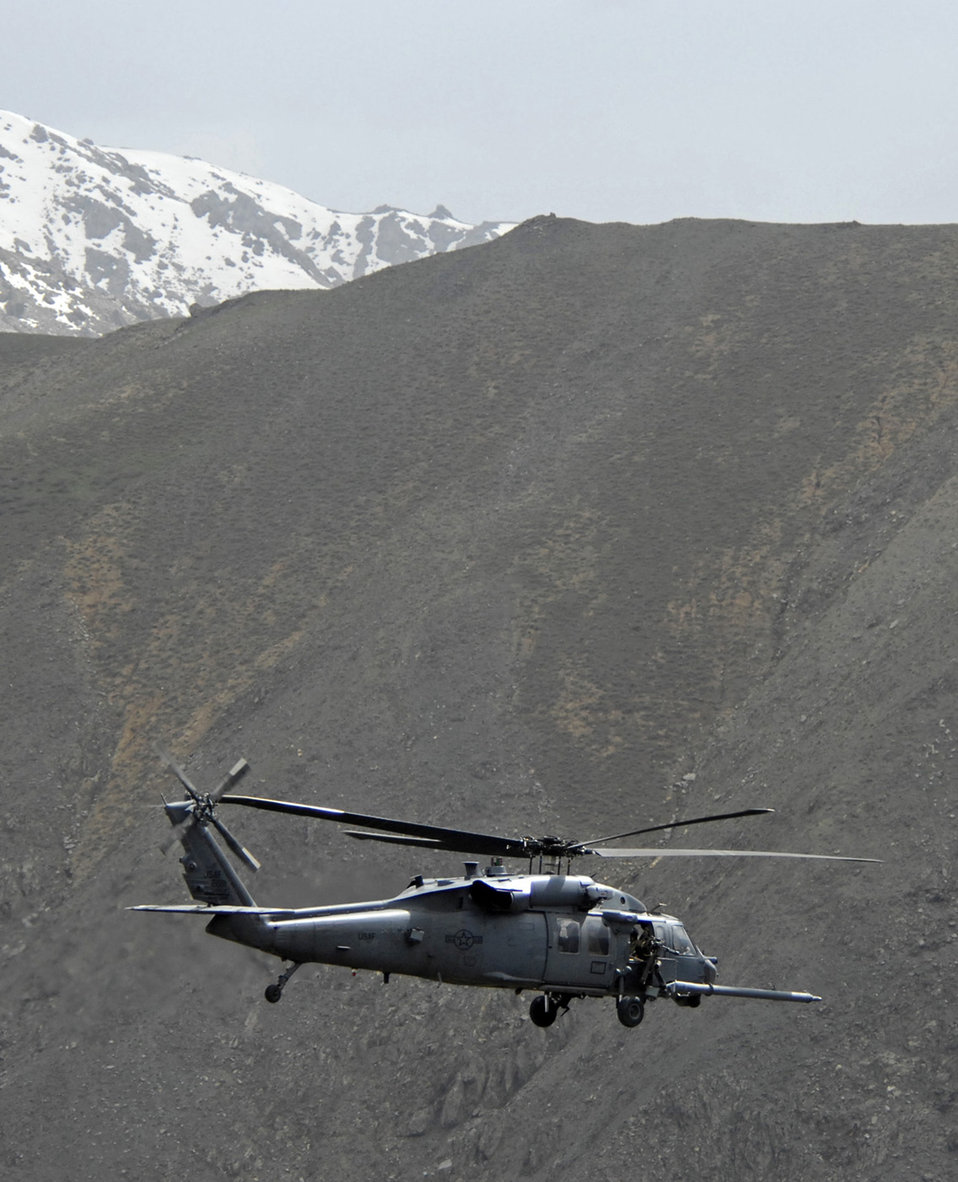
New York Guardsmen stay on alert to save lives

A 101st Expeditionary Rescue Squadron HH-60G Pave Hawk flies through the Hindu Kush mountain passes during a training mission April 20 over Afghanistan.